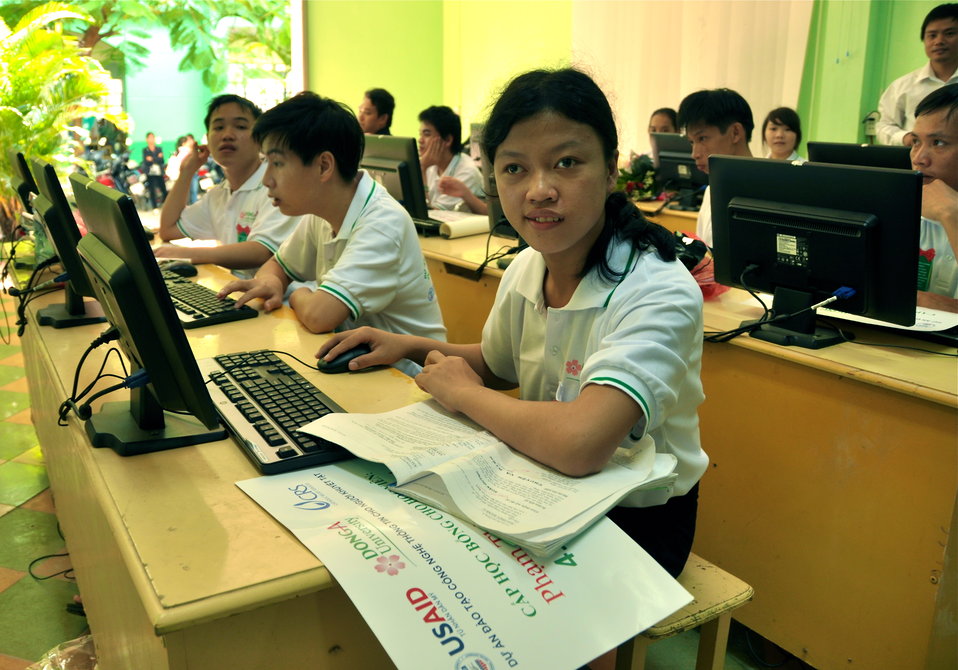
New class of students starts at Dong A Univeristiy with support from USAID and CRS

Photo: @USAIDVietnam
December 3, 2012